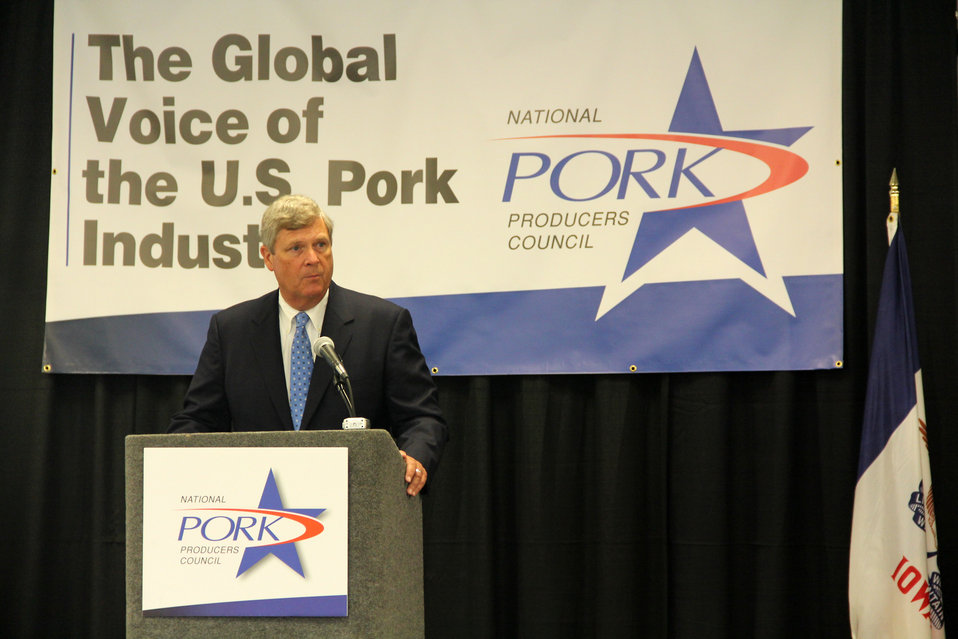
Agriculture Secretary Tom Vilsack to Deliver Remarks at World Pork Expo in Des Moines, IA on Jun. 5, 2014.